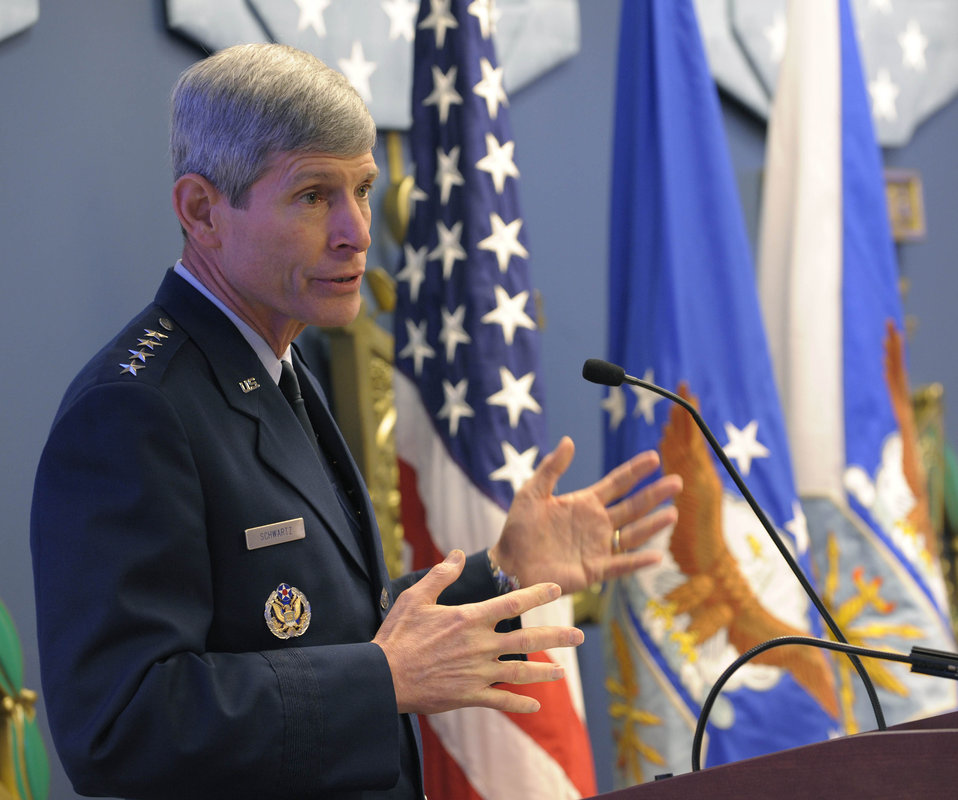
Lance P. Sijan Leadership Award

Air Force Chief of Staff Gen. Norton Schwartz gives remarks April 21, 2010, prior to presenting the 2009 Lance P. Sijan Leadership Award to this year's recipients in a ceremony in the Pentagon's Hall of Heroes. The award, named in honor of the first U.S. Air Force Academy graduate to receive the Medal of Honor, is presented annually to four Airmen who have demonstrated outstanding leadership abilities.